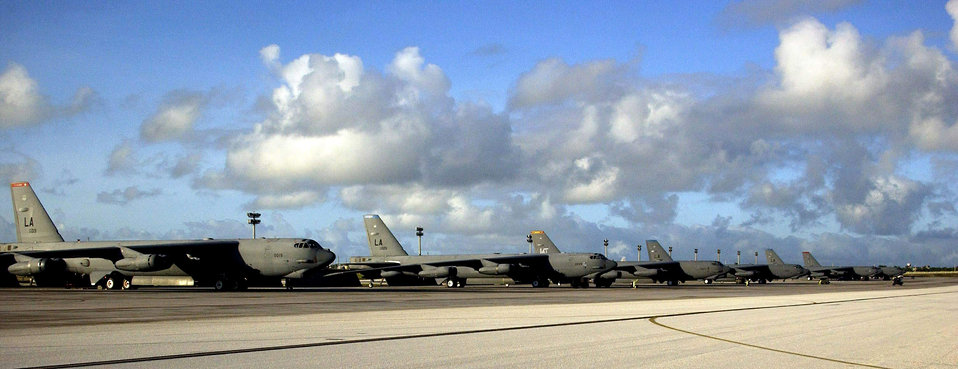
Barksdale B-52s arrive in Guam, complete bomber rotation

A row of B-52 Stratofortresses from Barksdale Air Force Base, La., and Minot AFB, N.D., await their next mission on the flightline Feb. 1 at Andersen AFB, Guam. The different colored tail markings represent the individual squadrons each bomber is assigned to at their home station. Approximately 300 Airmen from Barksdale AFB arrived on Guam recently as part of a scheduled rotation of bomber units into the Pacific theater.